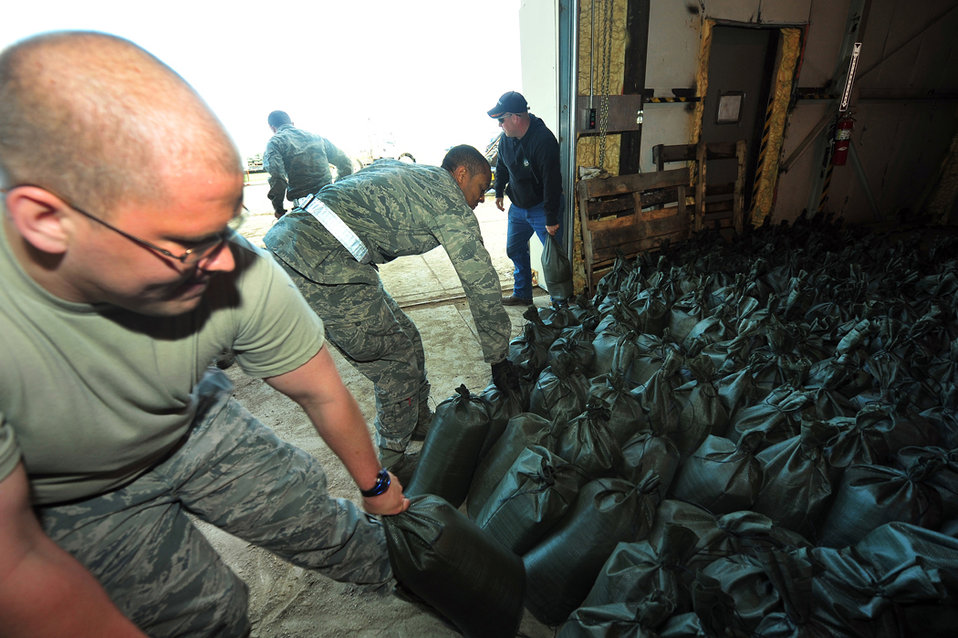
Minot Airmen fight flood

Staff Sgt. David Powell and Airman 1st Class Roddricus Philpot stack sandbags on pallets June 22, 2011, to be used to try and stop raising flood water threatening Minot, N.D. Sergeant Powell and Airman Philpot are crew chiefs with the 5th Aircraft Maintenance Squadron at nearby Minot Air Force Base.